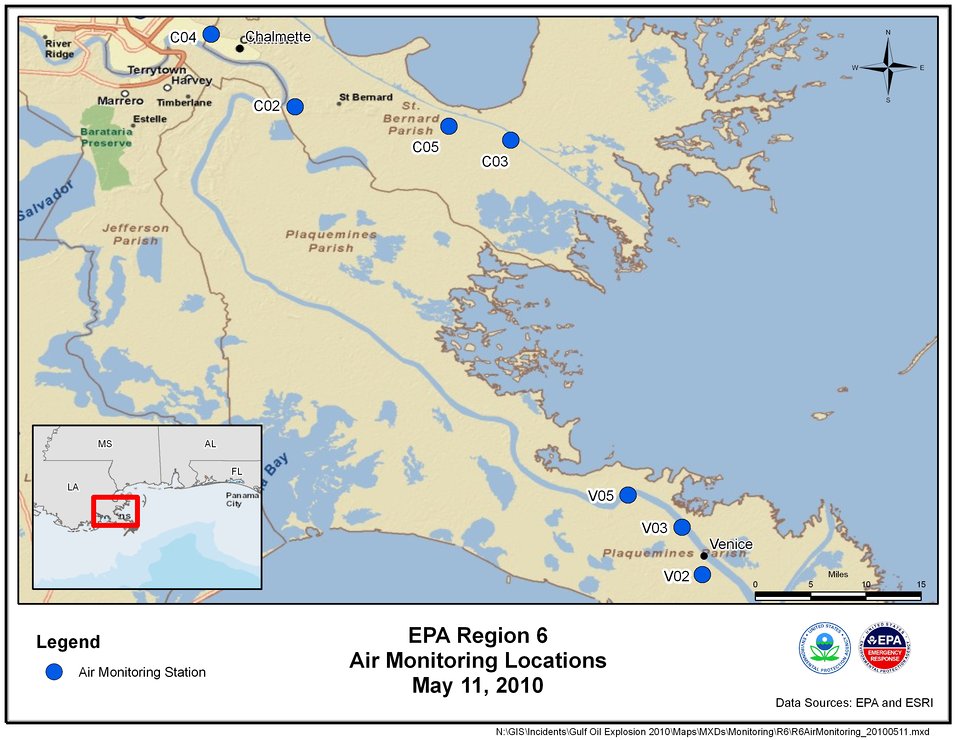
EPA Air Monitoring Locations May 11, 2010